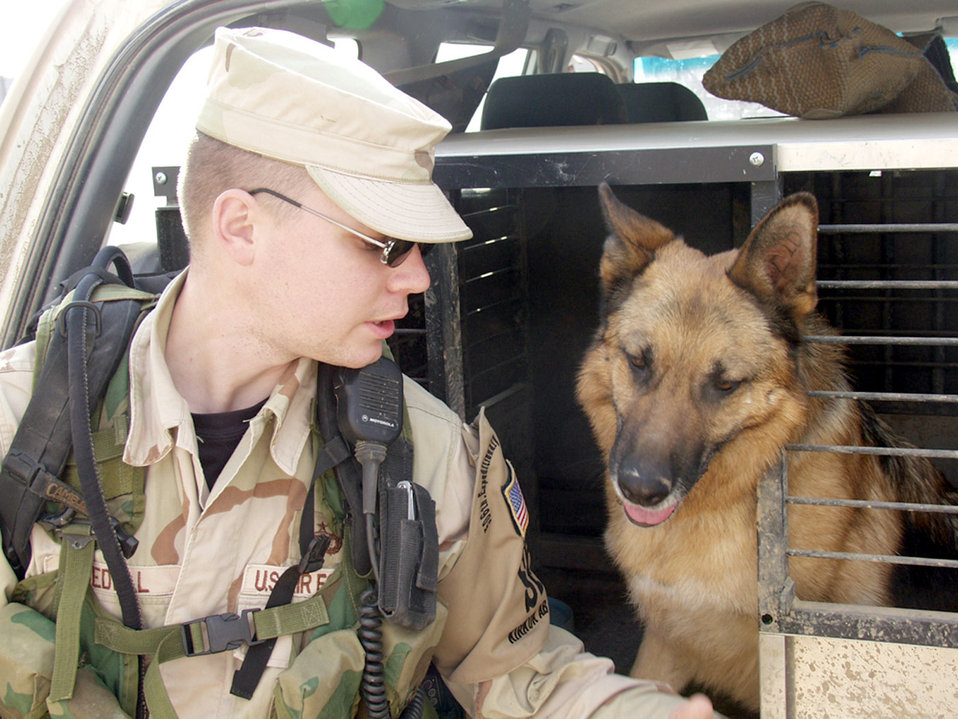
Working like a dog

KIRKUK AIR BASE, Iraq -- Staff Sgt. Andrew Bedell shares some downtime with his military working dog, Exa, after a long day. Sergeant Bedell is a working dog handler with the 506th Expeditionary Security Forces Squadron here. Both are deployed from McConnell Air Force Base, Kan.